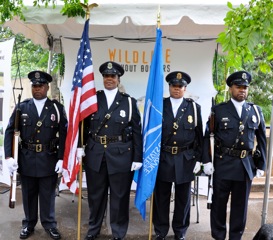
Save Vanishing Species Stamp First Day of Issue